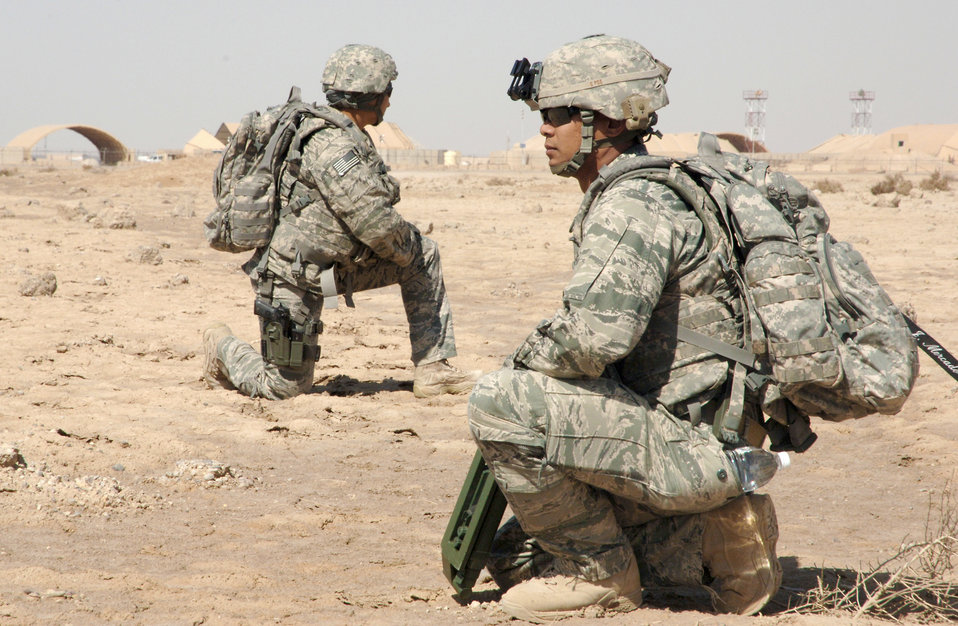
EOD Airmen

Senior Airman Jesse Mercado (front) and Staff Sgt. Christin Merriweather look for hidden dangers during a training scenario March 3, 2011, at Ali Air Base, Iraq. Airman Mercado and Sergeant Merriweather are explosive ordnance disposal technicians assigned to the 407th Expeditionary Operations Support Squadron.